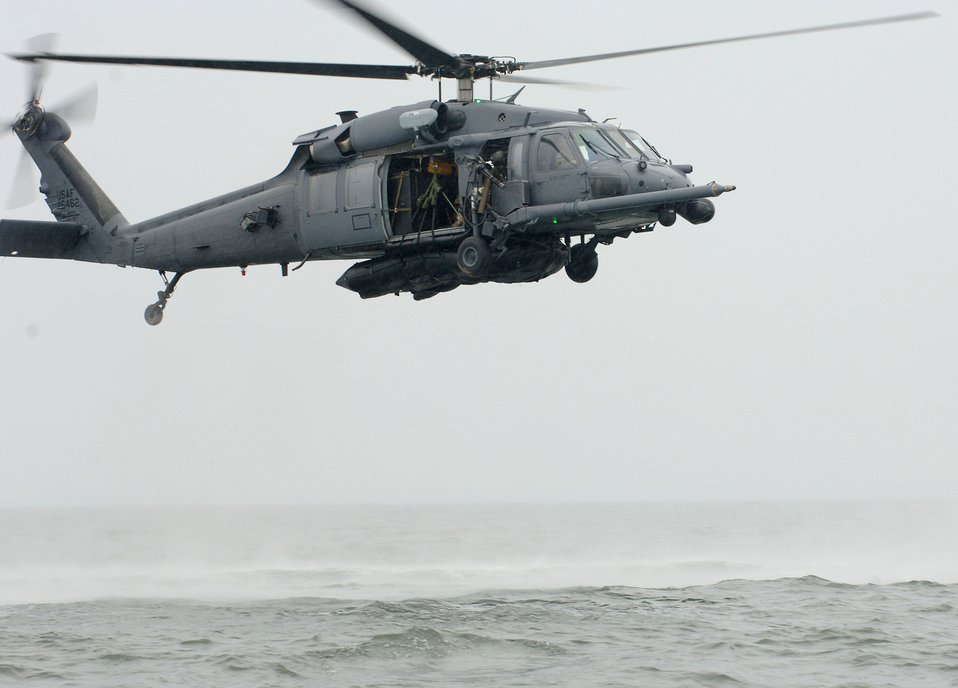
New capability improves search, rescue response

A rescue crew from the 347th Rescue Group at Moody Air Force Base, Ga., test a